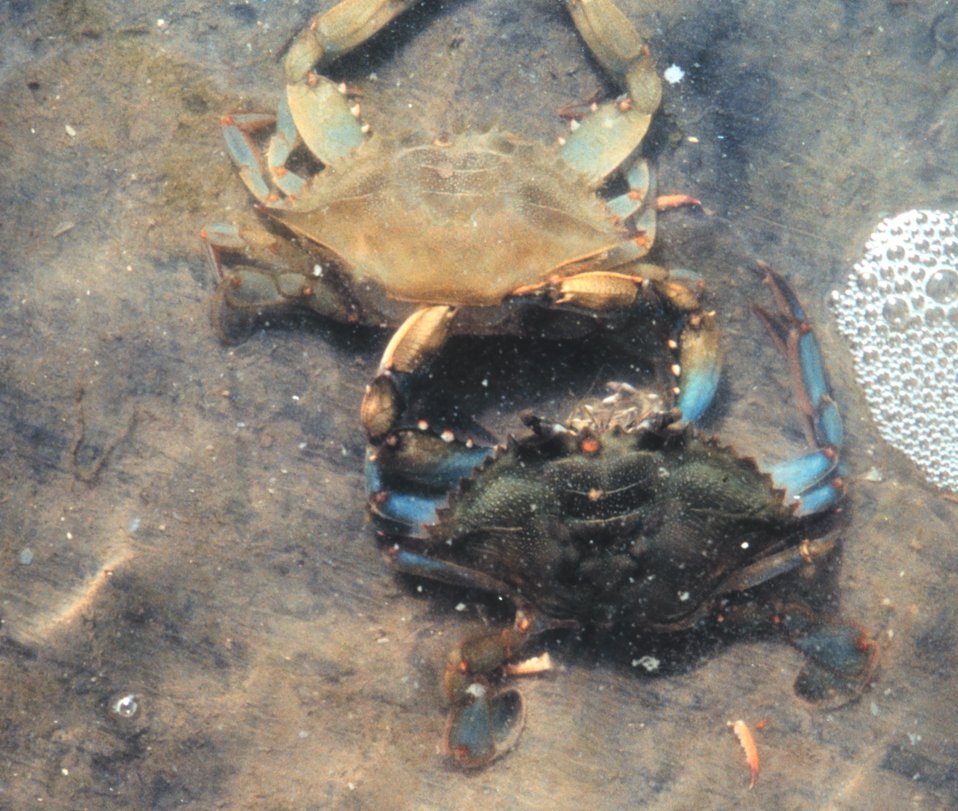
Photo #8 of 8. Having reached the 'buster' molt stage, a Maryland blue crab , Callinectes sapidus, sheds its shell. The genus and species mean tasty The genus and species mean tasty beautiful swimmer.